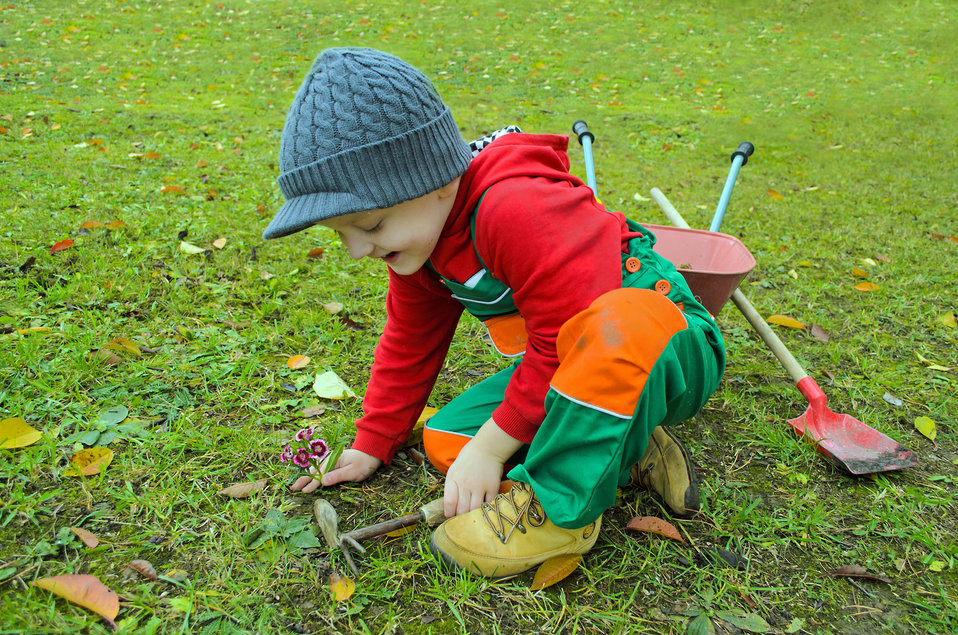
Little gardener.